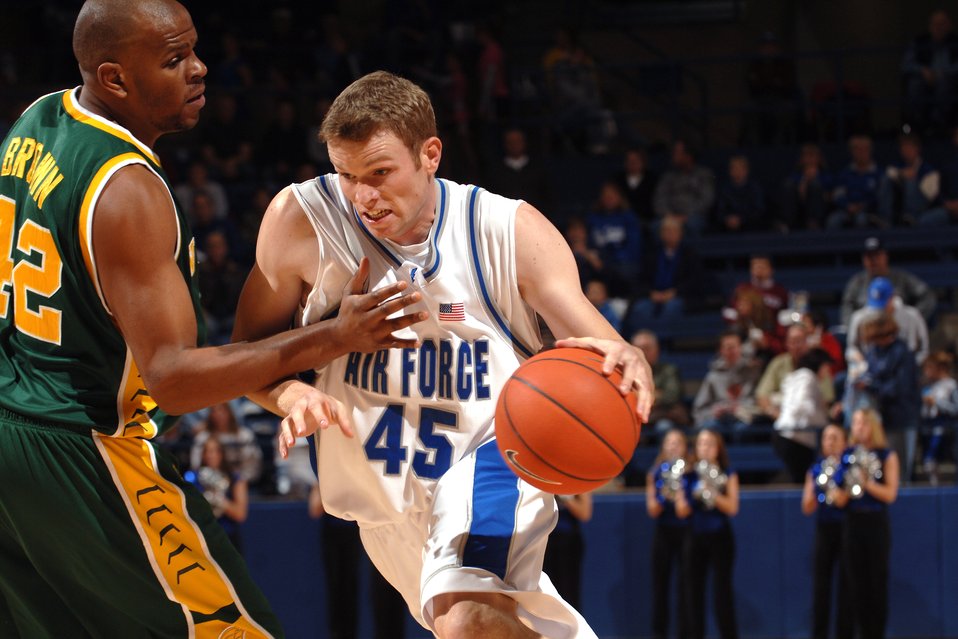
Falcons battle Colorado

Falcon center Nick Welch drives past Norfolk State's Calvin Brown Dec. 13 at Clune Arena. Welch scored eight points and grabbed five rebounds in Air Force's 70-47 win over the Spartans.